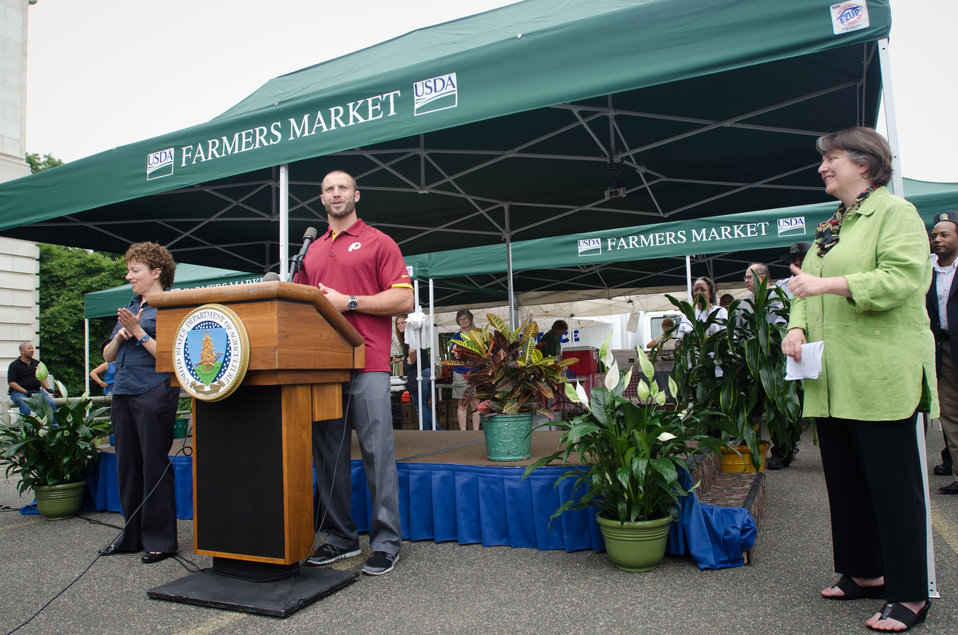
Agriculture Deputy Secretary Kathleen Merrigan gave a thumb-up when Washington Redskins, #37, Reed Doherty stressed the importance of healthy eating and 60-minutes of physical activities each day, at the opening of the 17th season of the U.S. Department of Agriculture (USDA) summer farmers market at the USDA Whitten Building east parking lot in Washington, D.C., on Friday, May 31, 2012. This year's theme is Grow, Healthy, Eat Healthy and Be Healthy. USDA and Fuel Up to Play 60, in partnership with the National Dairy Council and the National Football League, invited employees, visitors and local school children to participate in opening day activities. New features for 2012 include an on-site sign language interpreter, a hand washing station, and a USDA-certified organic vendor. Other products sold today are fresh fruits, vegetables, herbs, baked goods, meats, kettle popcorn, local honey, hand-made soap and more.